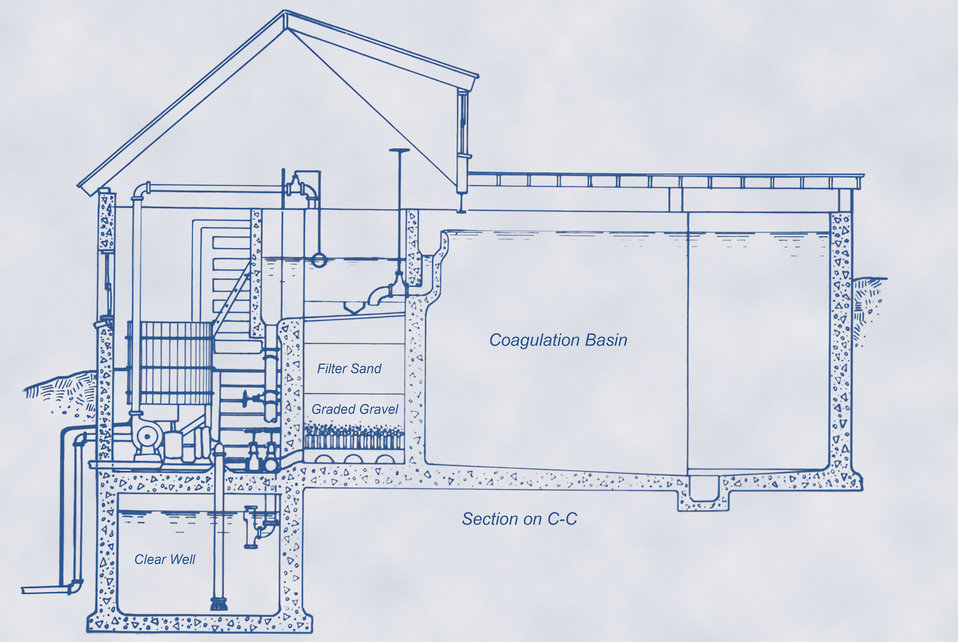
This historic 1922 diagram depicted a small municipal water filtration plant revealing the general arrangement of the plant's coagulation basin, filter, and clear well. This was a cross-sectional view of the plant as seen from the side. Other views of this filtration plant can be seen in PHIL 8645, 8646, 8648, 8649 images.